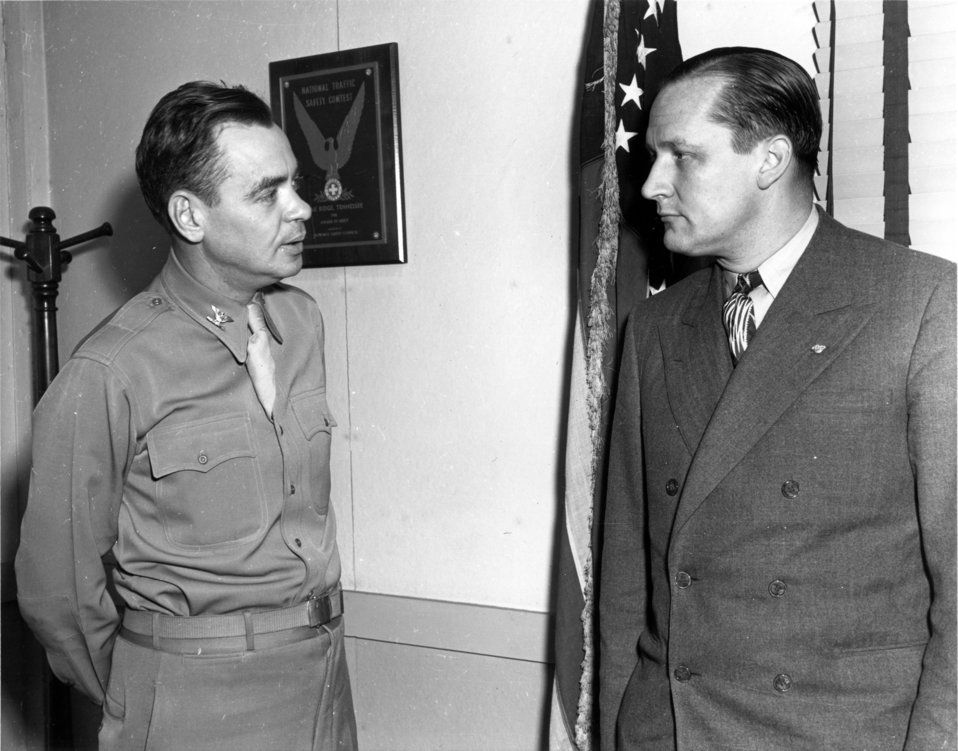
Notable persons at Oak Ridge